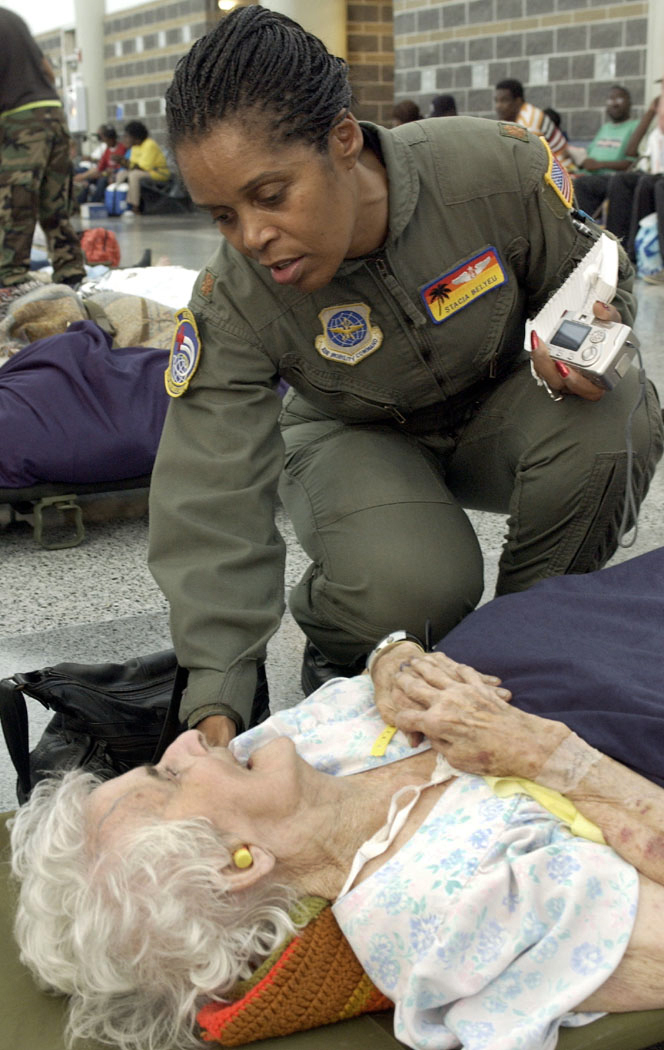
Air Force MASF is last stop for some hurricane victims in New Orleans

NEW ORLEANS -- Maj. Stacia Blyeu comforts an elderly patient at the Louis Armstrong New Orleans International Airport moments before she is evacuated from here Sept. 3. Major Blyeu is a flight nurse with the 452nd Air Evacuation Squadron at March Air Reserve Base, Calif.